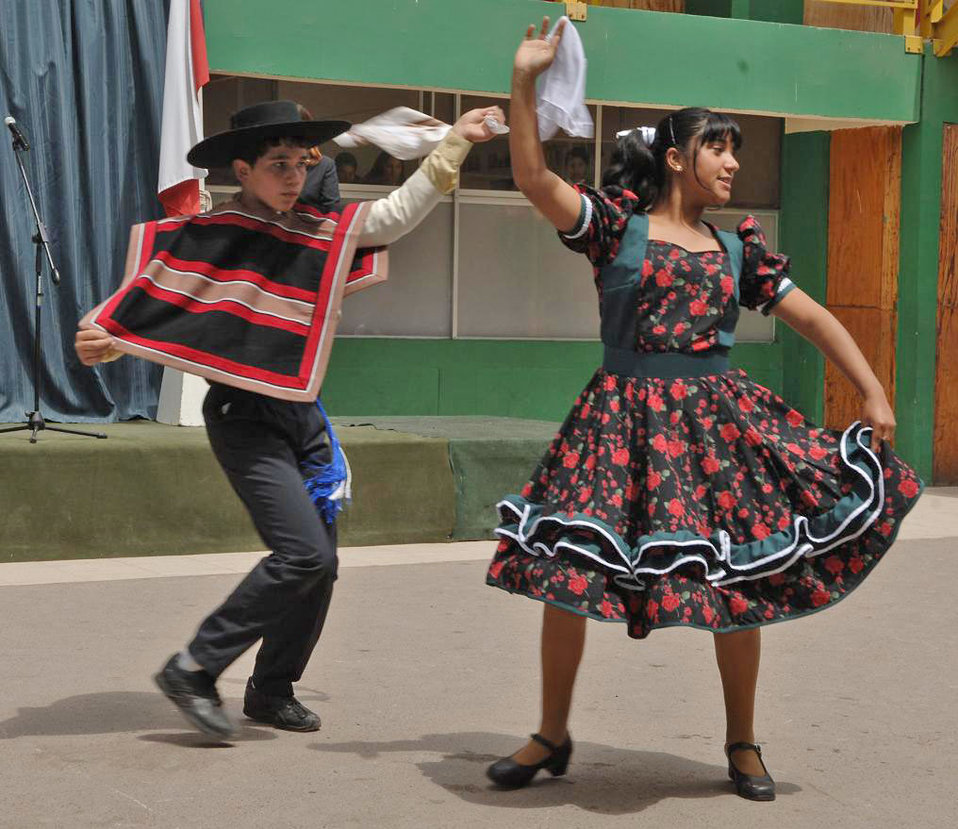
U.S., Chilean airmen visit school

Students of Colegio Macaya perform a traditional dance as part of a welcoming ceremony for visiting U.S. and Chilean air force airmen Oct. 27, 2009, in Alto Hospicia, Chile.